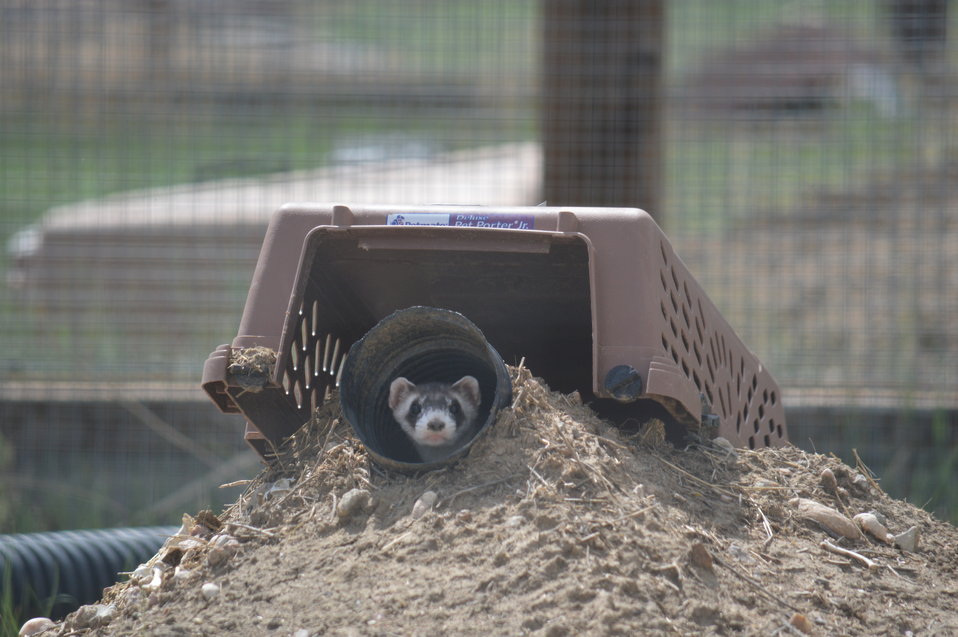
Interns visit the NBFFCC

In the summer of 2012, USFWS Region 6 interns visited the National Black-footed Ferret Conservation Center (NBFFCC) in Colorado to learn how the program reintroduces the endangered Black-footed ferret back into its native habitat.